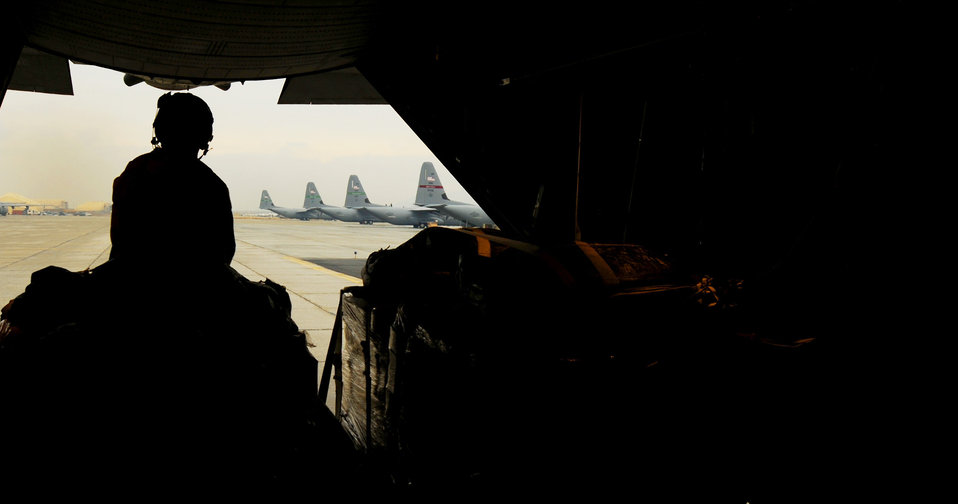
C-130 low-cost, low-altitude combat airdrops now operational

Airman 1st Class Kameron Trout watches as a C-130 Hercules prepares to take off before airdropping low-cost, low-altitude resupply bundles Feb. 6, 2010, in Afghanistan. Airman Trout is a loadmaster with the 774th Expeditionary Airlift Squadron at Bagram Airfield, Afghanistan.